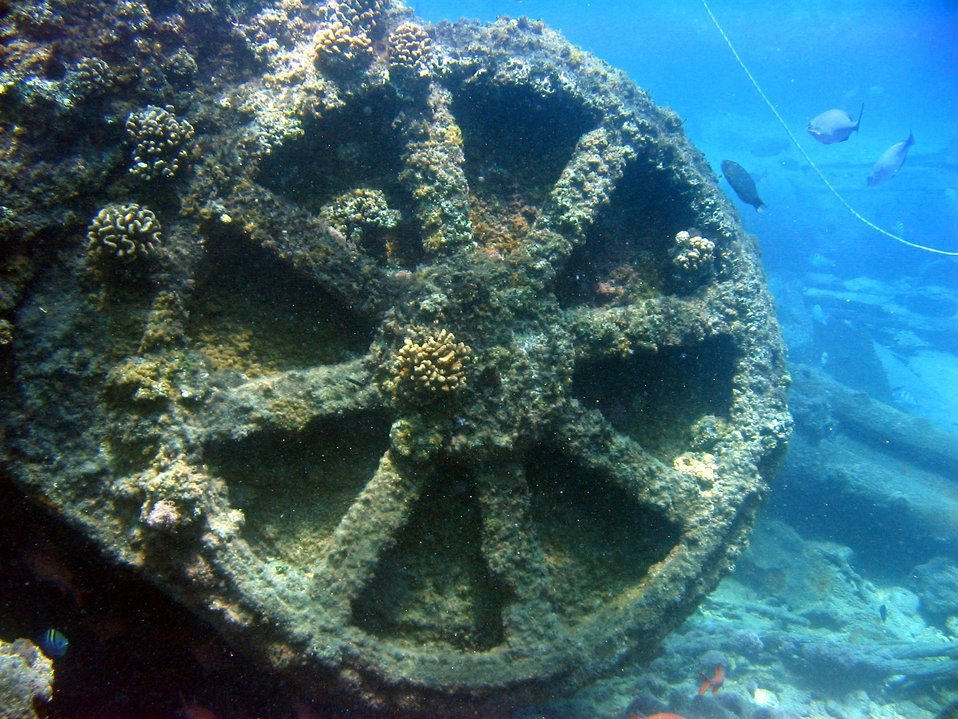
Debris from modern ship wreck on Pearl and Hermes Reef.